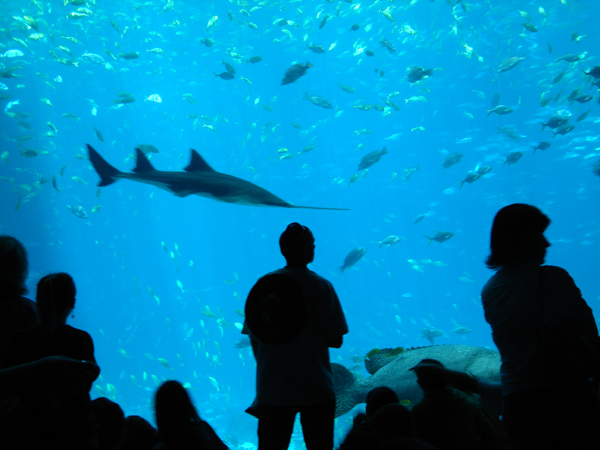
Photo by Angela Grider. Sawfish in the viewing theatre at the Georgia Aquarium.